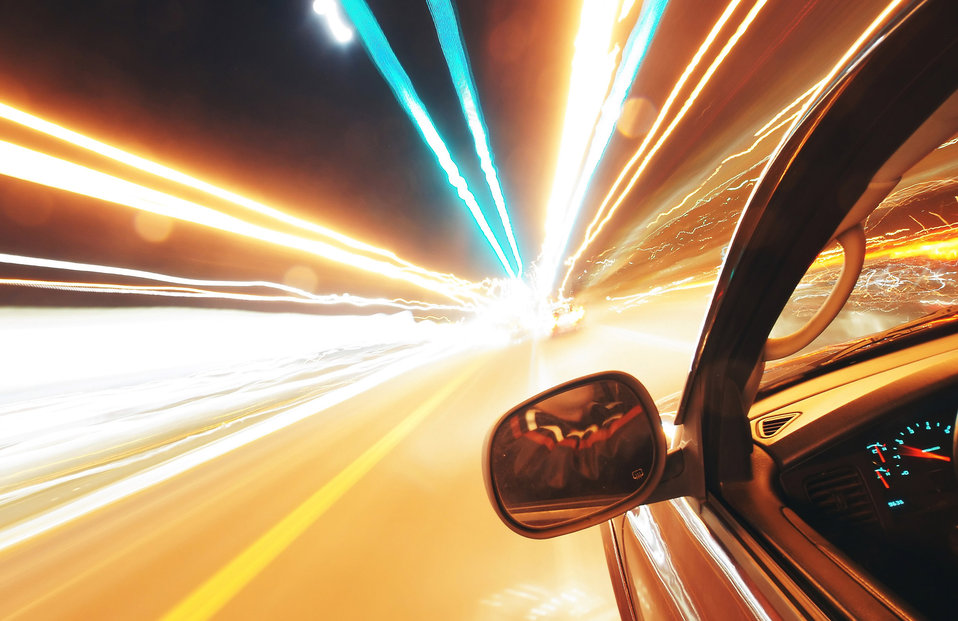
Light travel.